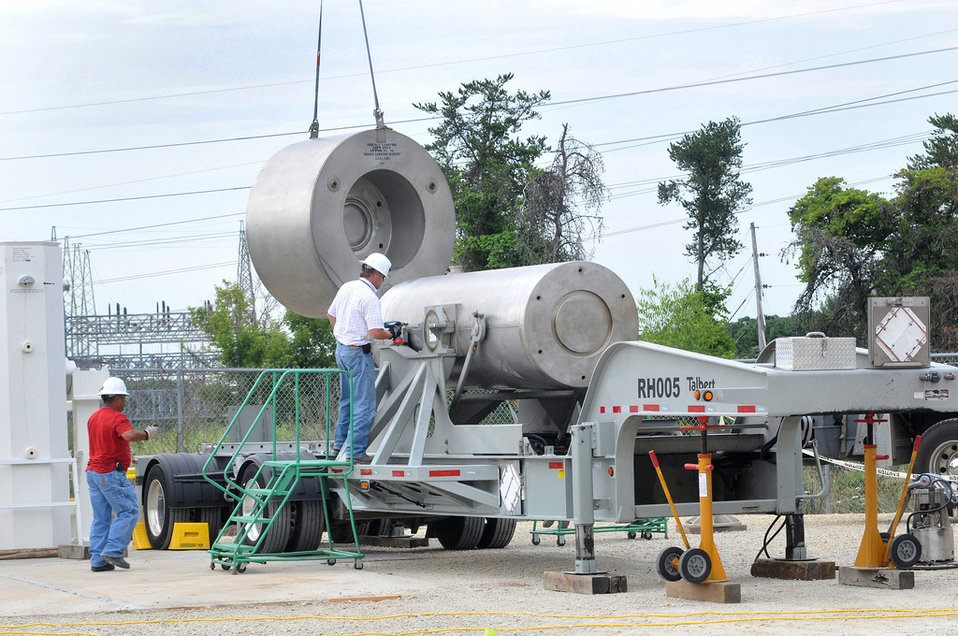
Workers at Argonne load the RLC into the shipping cask. This a heavily shielded and very secure shipping cask that will ensure the RH TRU waste containers are safely and securely transported to WIPP.

The Next-Phase Transuranic Waste Project is squarely focused on reducing the quality of transuranic waste currently housed at Argonne. Removal of this material supports Argonne's overall goal of reducing nuclear footprint. The project accelerates work that has already begun by providing additional resources to drive projects across the site.